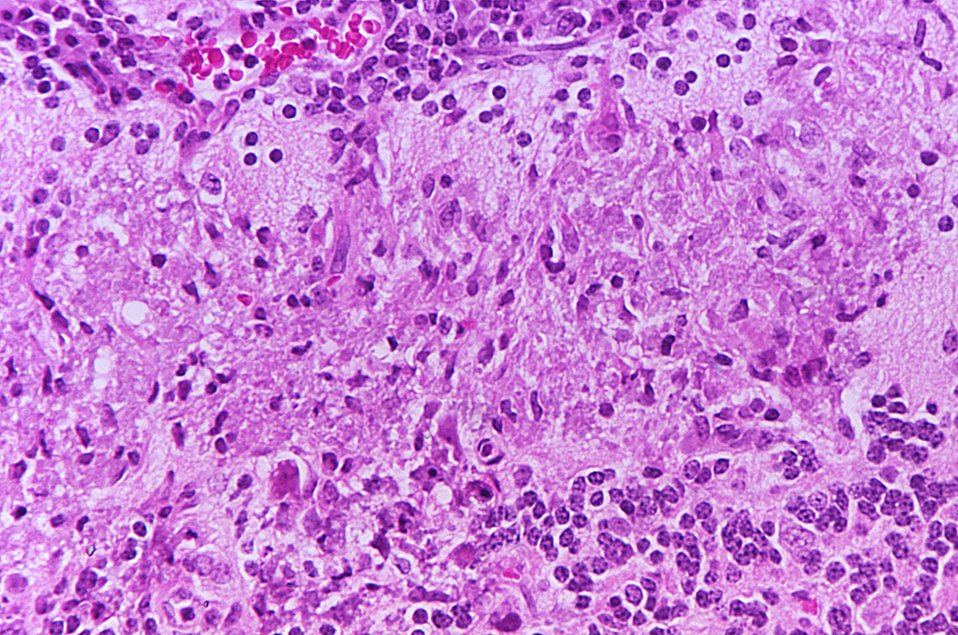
This micrograph reveals the histopathologic changes found in Tamiami virus encephalitis; Mag. 300X.